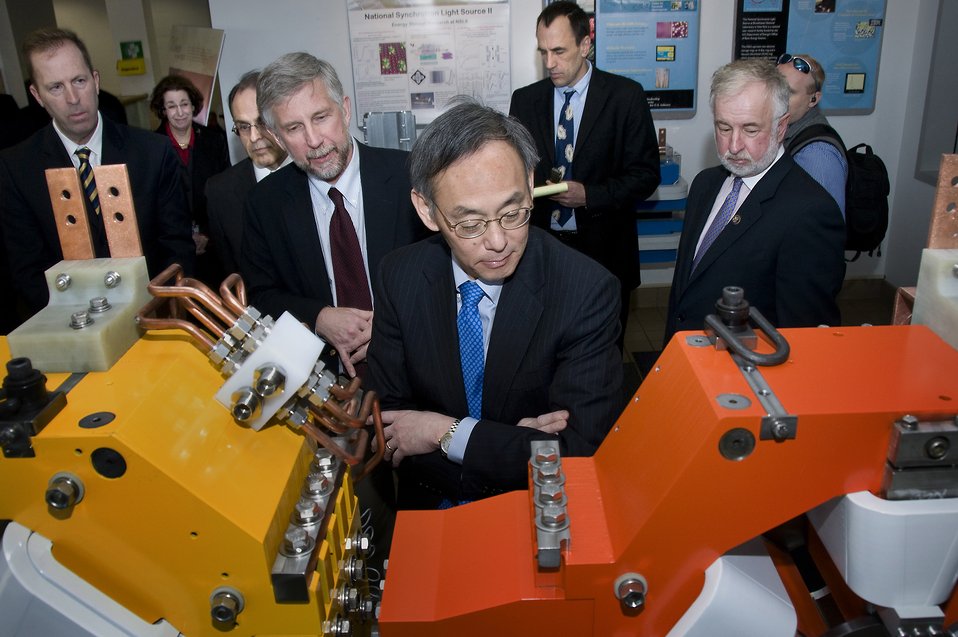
Tour at BNL, Director Sam Aronson, Associate Lab Director for Light Sources Steven Dierker, Secretary Chu and Congressman Bishop look at prototype magnet for the National Synchrotron Light Source II, the lab's new facility.

The NSLS II will be a new state-of-the-state-art, medium-energy electron storage ring (three billion electron-Volts) designed the deliver world-leading intensity and brightness, and will produce x-rays more than 10,000 time brighten than the current NSLS. NSLS-II research will focus on some of our most important challenges at the nanoscale: clean and affordable energy; self-assembly; molecular electronics; and high temperature superconductors.